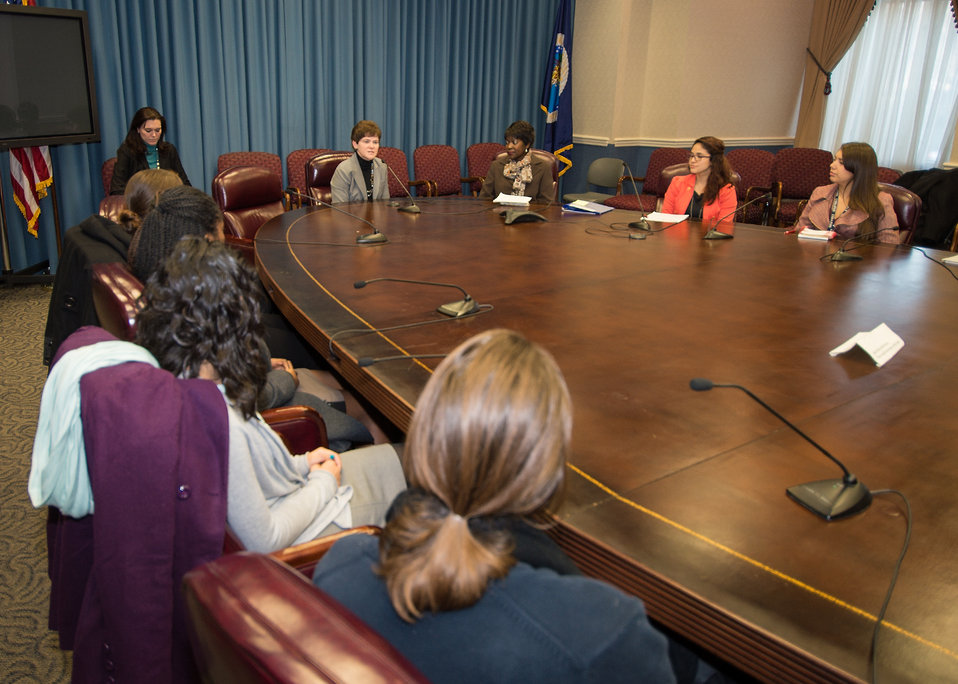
Agriculture Deputy Secretary Krysta Harden speaks to questions posed by students of the Hispanic Association of Colleges and Universities (HACU) National Internship Program Fall 2014 Interns during the Pathways Programs for Students and Recent Graduates to Federal Careers program at the U.S. Department of Agriculture (USDA) on Tuesday, Dec. 3, 2013 in Washington, D.C.